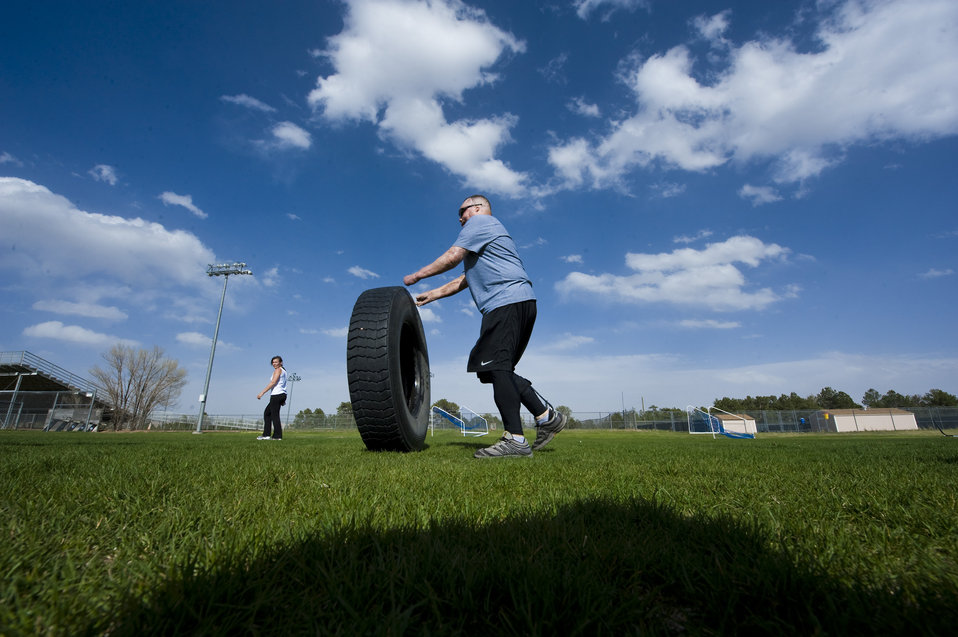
Warrior Games

Air Force Israel Del Toro flips a tire during a training session leading up to the Warrior Games, May 9, 2011, at the Air Force Academy. The Warrior Games help elevate abilities through athletic competition for wounded, ill, and injured service members by providing a focal event to empower the incorporation of athletics into military wounded warrior programs, the games run through May 16 – May 21.